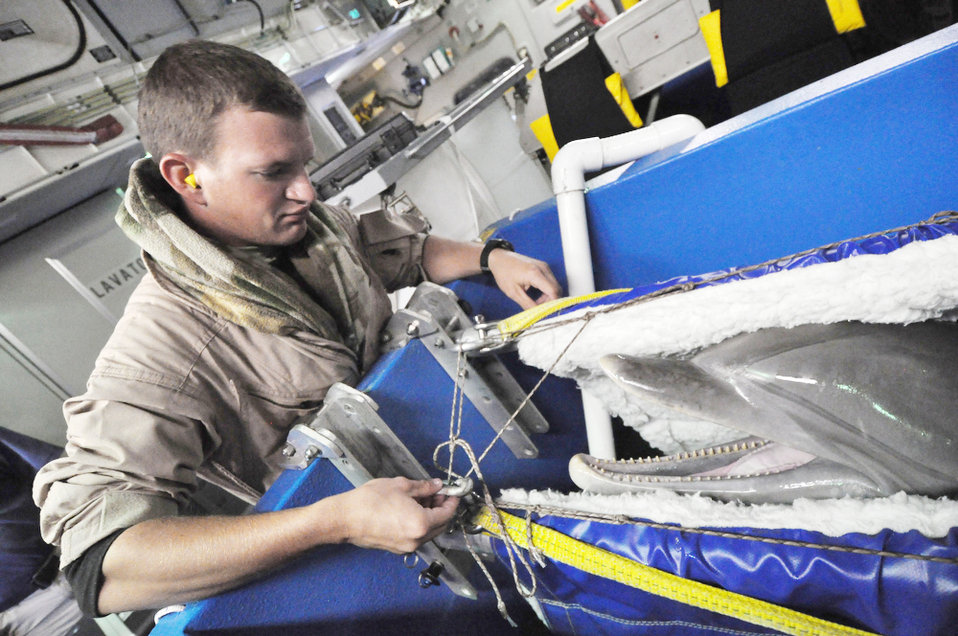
Dolphins fly to New Caledonia with Hickam C-17 crew

Navy Petty Officer 3rd Class Aaron Nutt gets the attention of his dolphin while aboard a C-17 Globemaster III from Hickam Air Force Base, Hawaii, Nov. 8, 2009, en route to New Caldeonia. Petty OfficerNutt is assigned to the Navy Marine Mammals program as a dolphin handler and the C-17 crew is taking the Sailor and dolphin to Noumea, New Caledonia, where they will participate in Lagoon Minex 2009, which is a humanitarian project where U.S. Navy, French, Australian and New Zealand military personnel will remove mines left over from World War II from the surrounding water of the area.